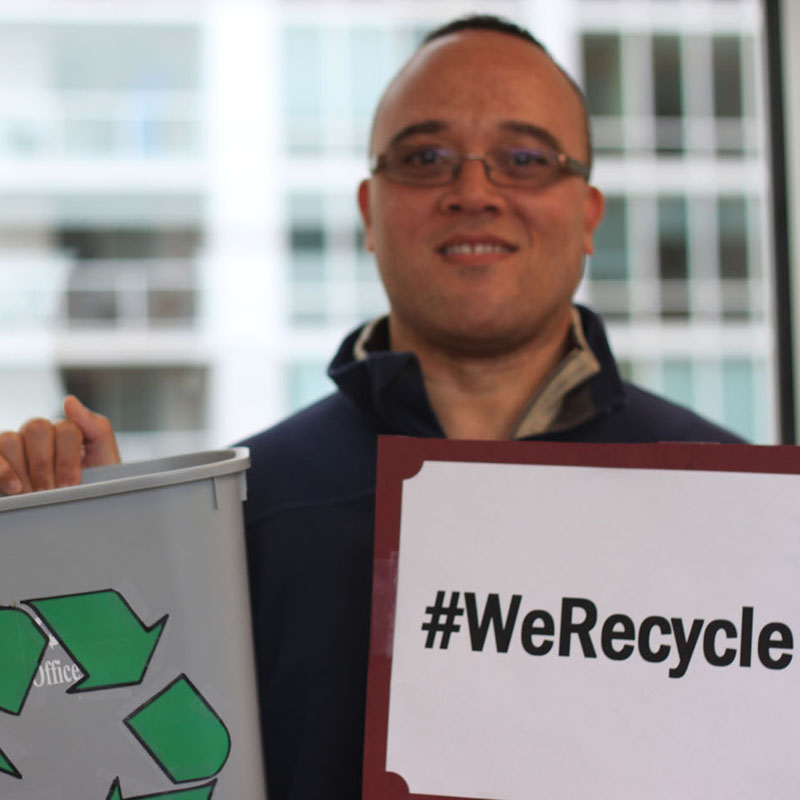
EPA Employee Bryan Recycles

At EPA, #WeRecycle. Learn how you can too: www2.epa.gov/recycle